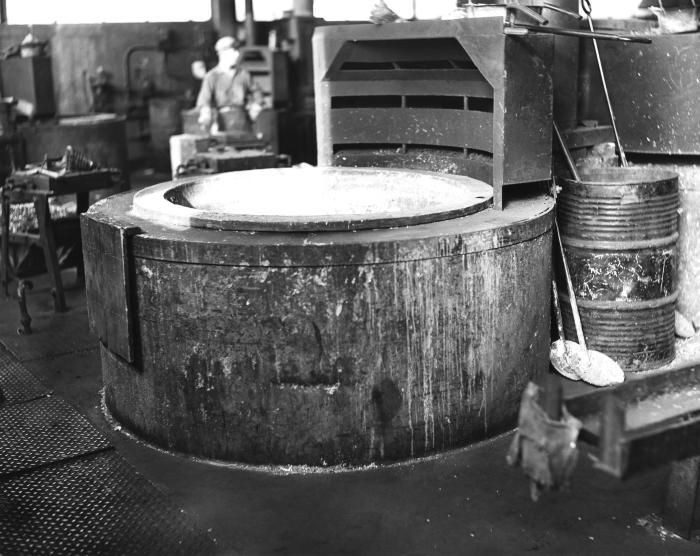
This historical photograph was provided by the Center for Disease Control's (CDC), National Institute for Occupational Safety and Health (NIOSH). It depicted a vat containaining an unknown substance, which was located inside an Indiana industrial factory, and was ventilated through an intake port situated on its upper rear rim. Note the male worker in the background who appeared to be wearing no filtered breathing mask, or goggles, but does appear to be wearing gloves.